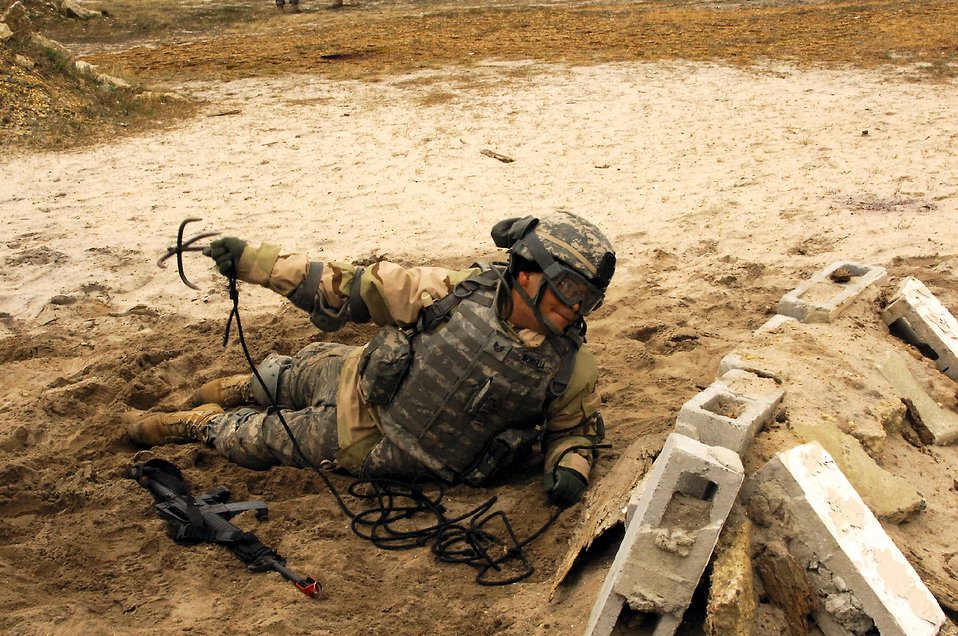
Airmen master Soldier skills training

Staff Sgt. Victor Montilla throws a hook to check for explosives during Individual Movement Technique training at the Fort Dix, N.J., improvised explosive device range. The training teaches troops how to conduct maneuvers in an unknown, often hostile, environment. Sergeant Montilla and his fellow Airmen, members of USAF Class 25, are completing the Soldier Skills Training Course as they prepare for various deployments around the globe. There are about 75 Airmen currently going through the month-long course.